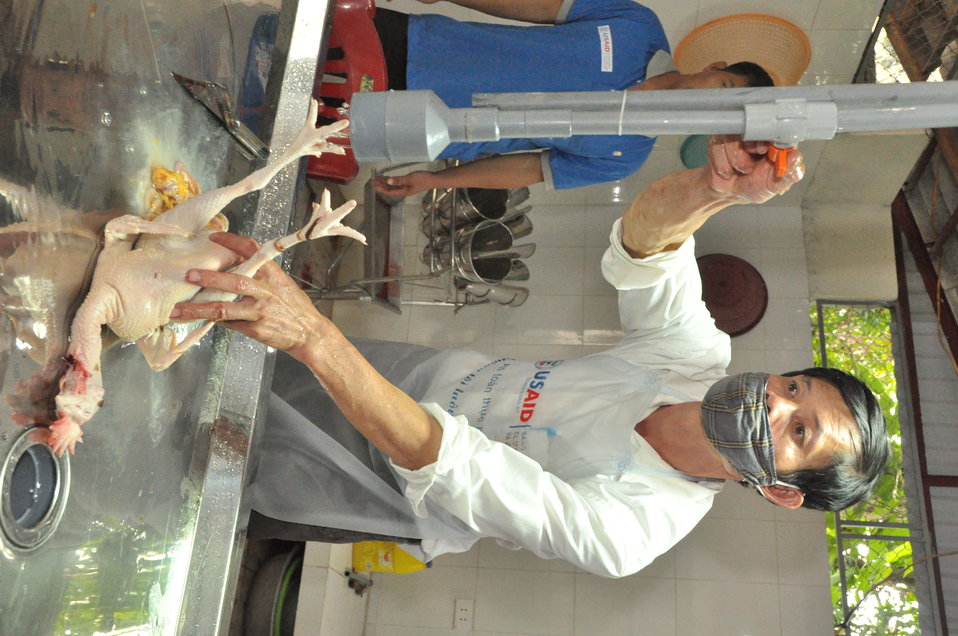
Handover Ceremony Hoa Mac Market Ha Nam

October 26, 2012